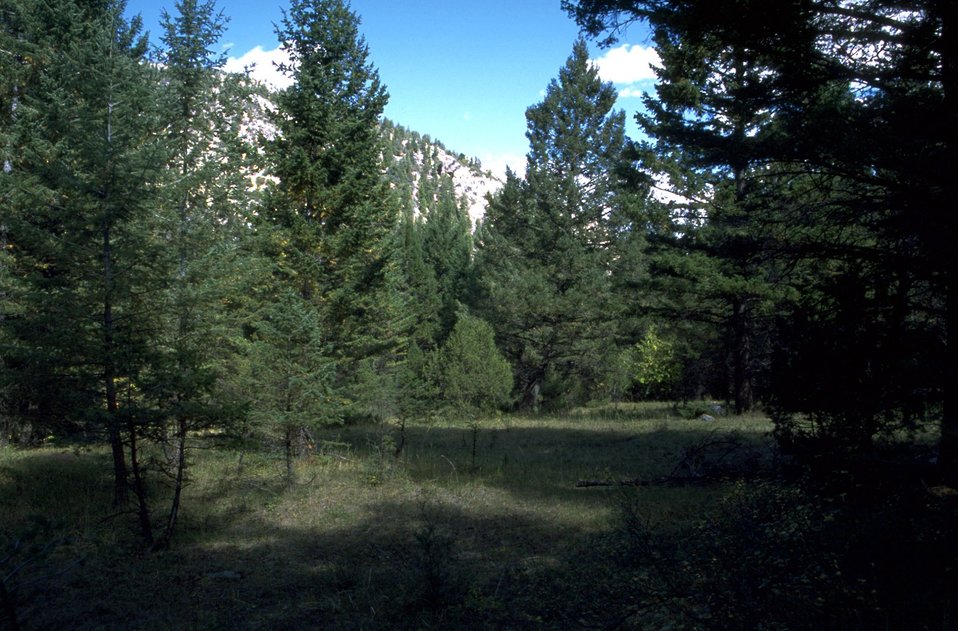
Ruby Wilderness Study Area